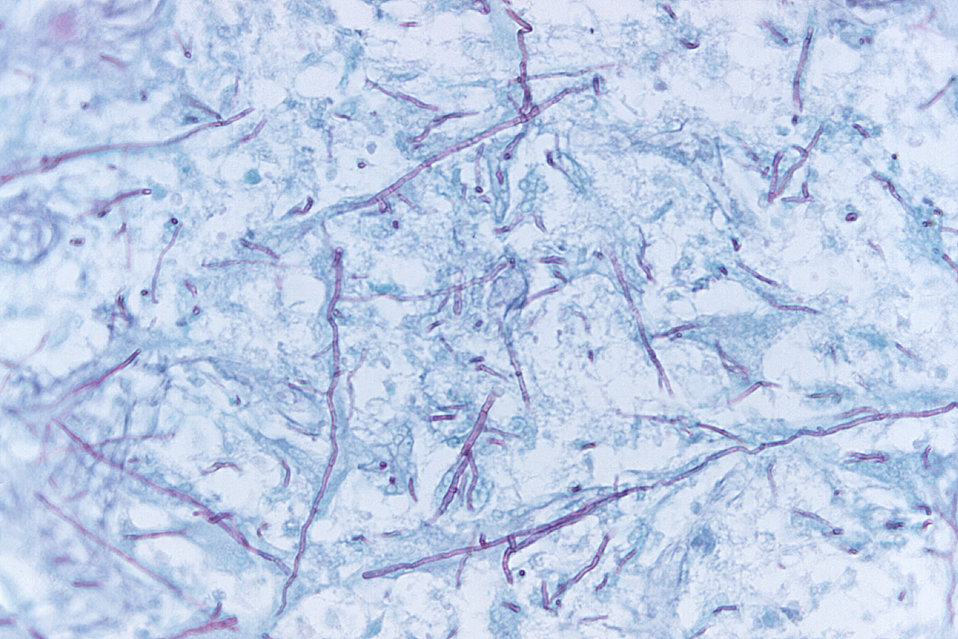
Magnified 300X, this PAS-stained photomicrograph depicted some of the cytoarchectural details observed in a chicken brain tissue sample due to what was determined to be a case of dactylariosis.